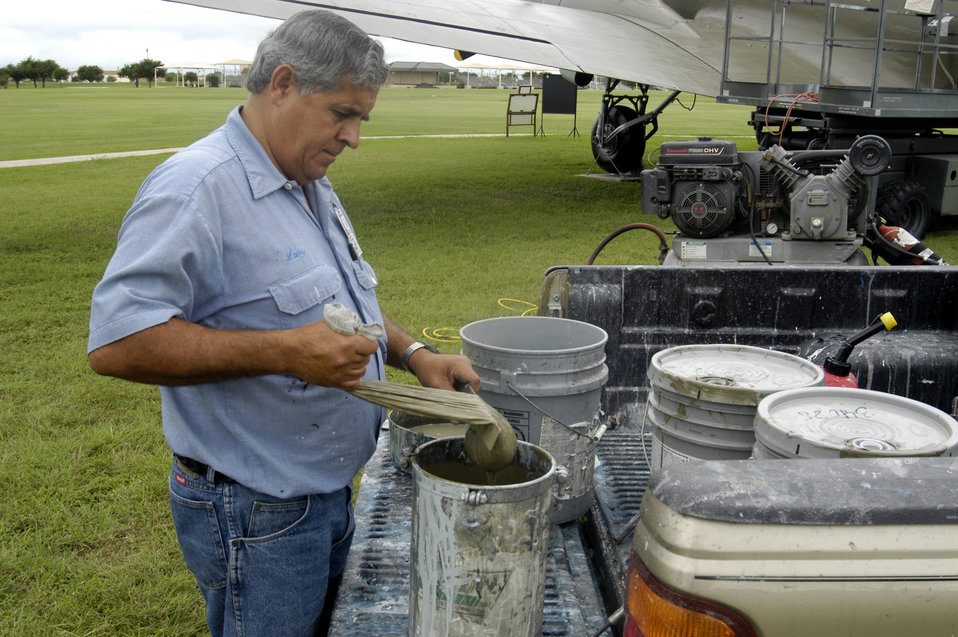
Preserving AF history

LACKLAND AIR FORCE BASE, Texas -- Larry Sterling strains the paint for a World War II vintage C-47 Skytrain. He is a contracted painter who restores planes around the base.